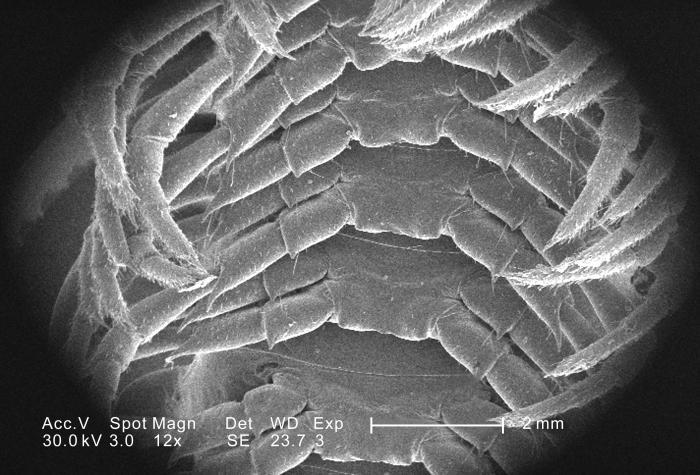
This scanning electron micrograph (SEM) depicted a greatly magnified infero-anterior view of the trunk region leg segments of an unidentified millipede found outside on the ground in the Decatur, Georgia suburbs; Magnified 94x. With their 'jointed legs', millipedes are members of the insect Phylum Arthropoda, and the Class Diplopoda. Each of the millipede's body segments is actually composed of two fused segments, and is known as a diplosegment, each of which possesses two pairs of legs.